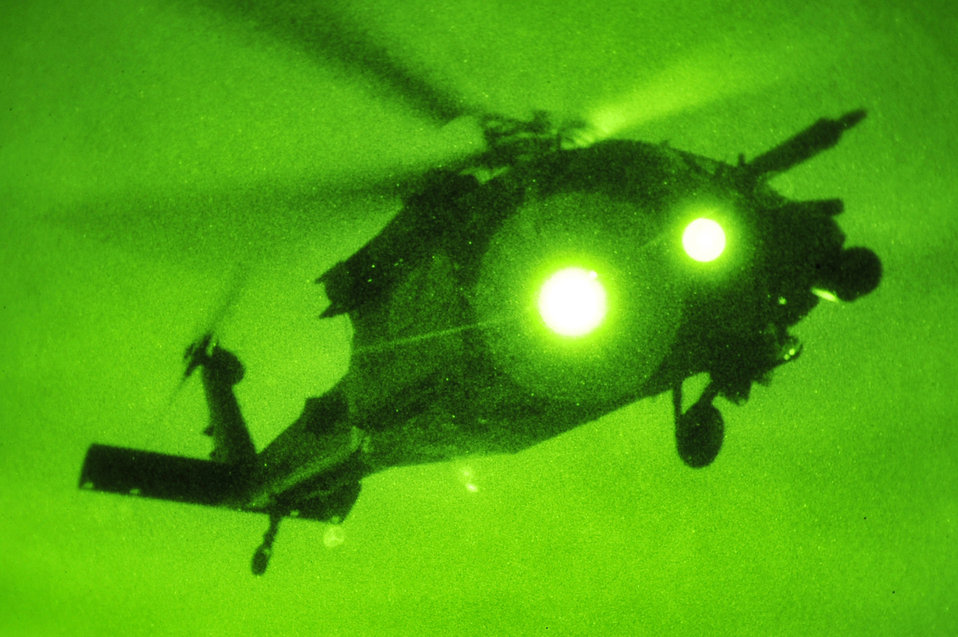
'Hawk' to the rescue

An HH-60 Pave Hawk takes off with three